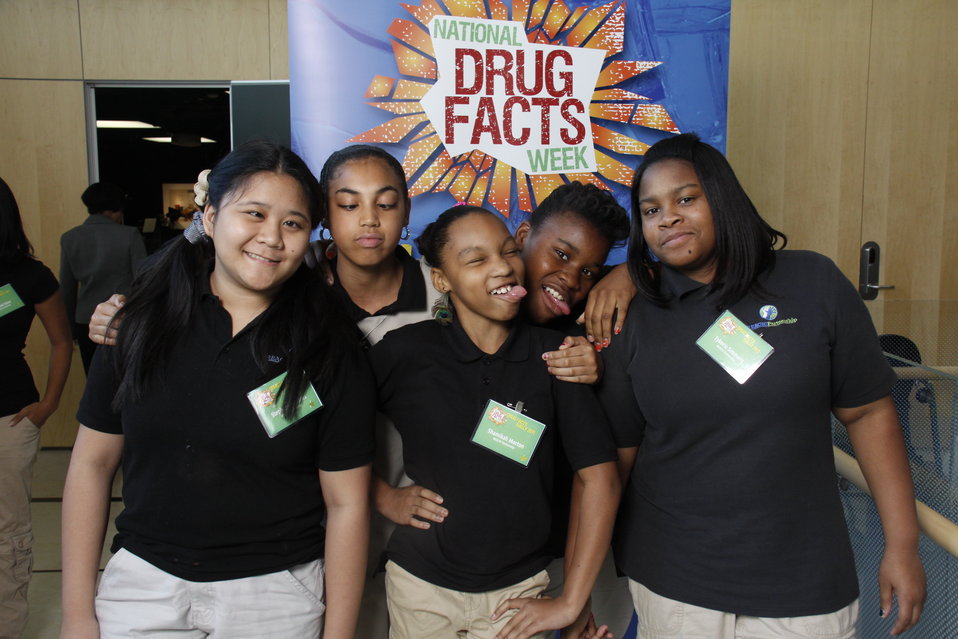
NDFW Mentor Event